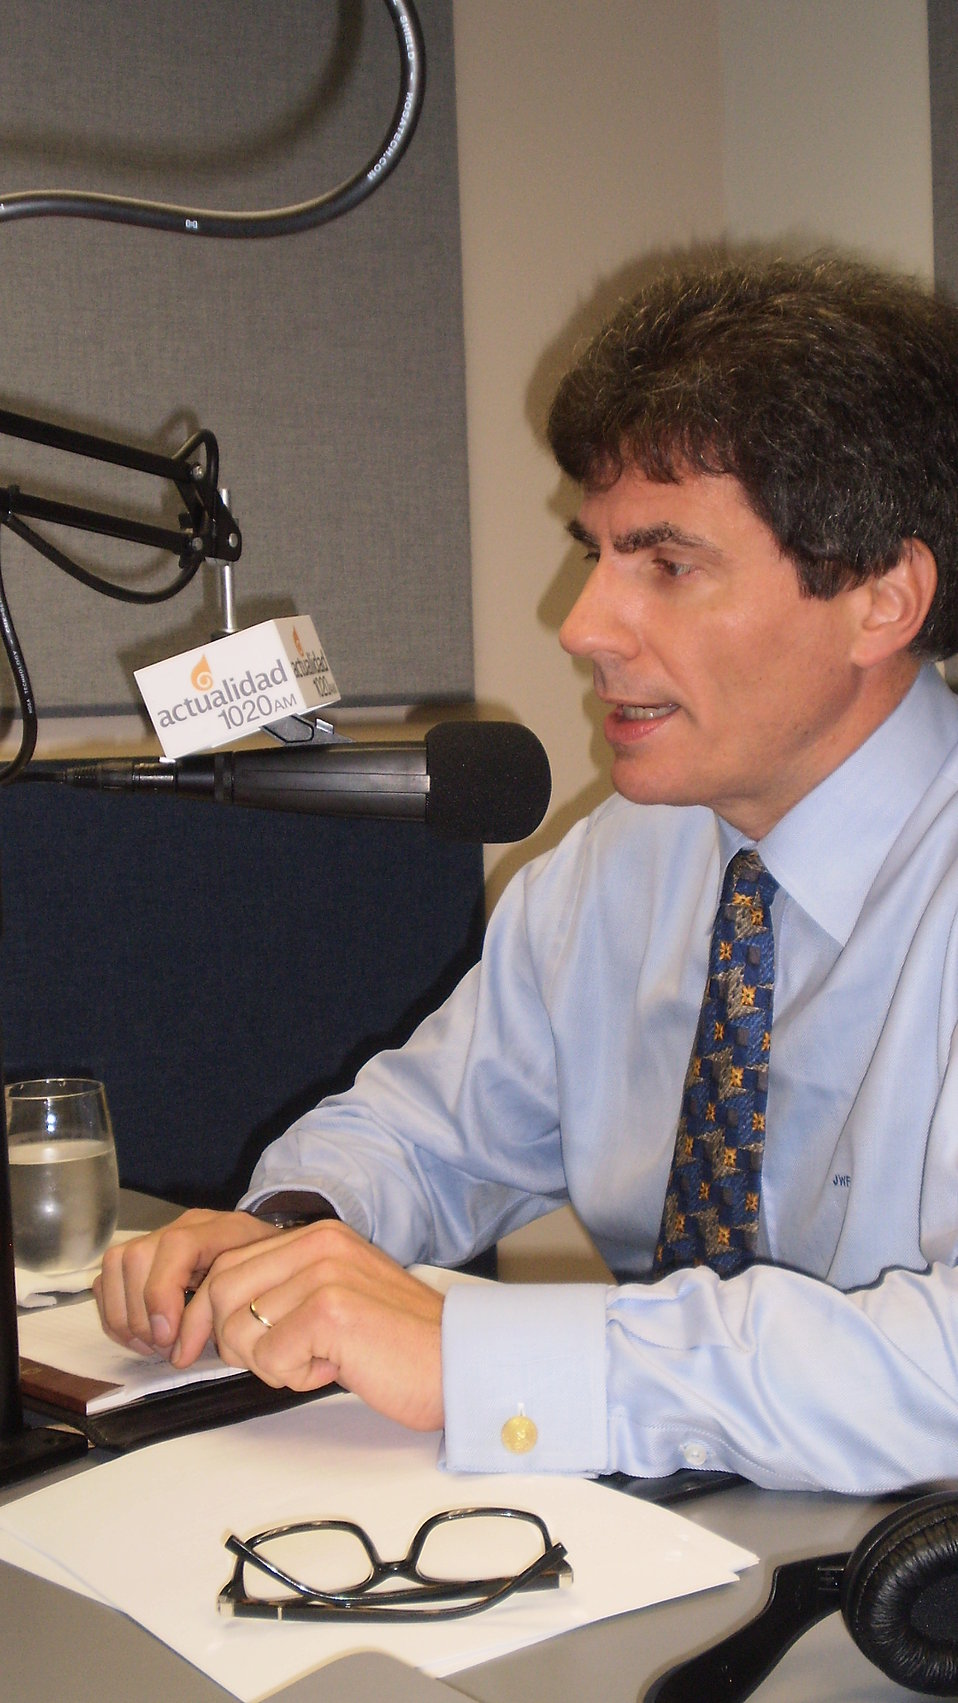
Assistant Secretary Fernandez Discusses the Administration's Focus on Latin America

Assistant Secretary for Economic, Energy and Business Affairs Jose W. Fernandez discusses the Administration’s focus on fostering an equal partnership with Latin America based on mutual respect, common interests, and shared values, in Miami, Florida, on February 1, 2011.